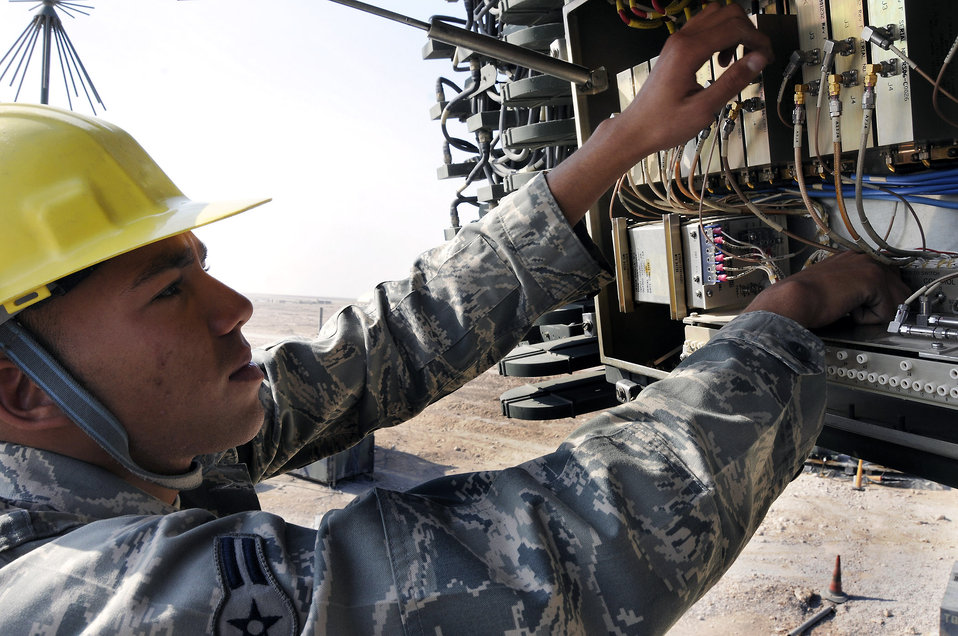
Airmen keep eyes on the sky to protect warfighters

Airman 1st Class William Lundy adjusts a receiver assembly Dec. 30, 2008, at an air base in Southwest Asia. Airman Lundy is a radar maintenance technician assigned to the 71st Expeditionary Air Control Squadron. The radar maintenance team assures that the radars remain in good working condition and calibration. The radars provide an extensive radar presence over the entire Arabian Gulf region. Airman Lundy is a native of Clarksville, Tenn.